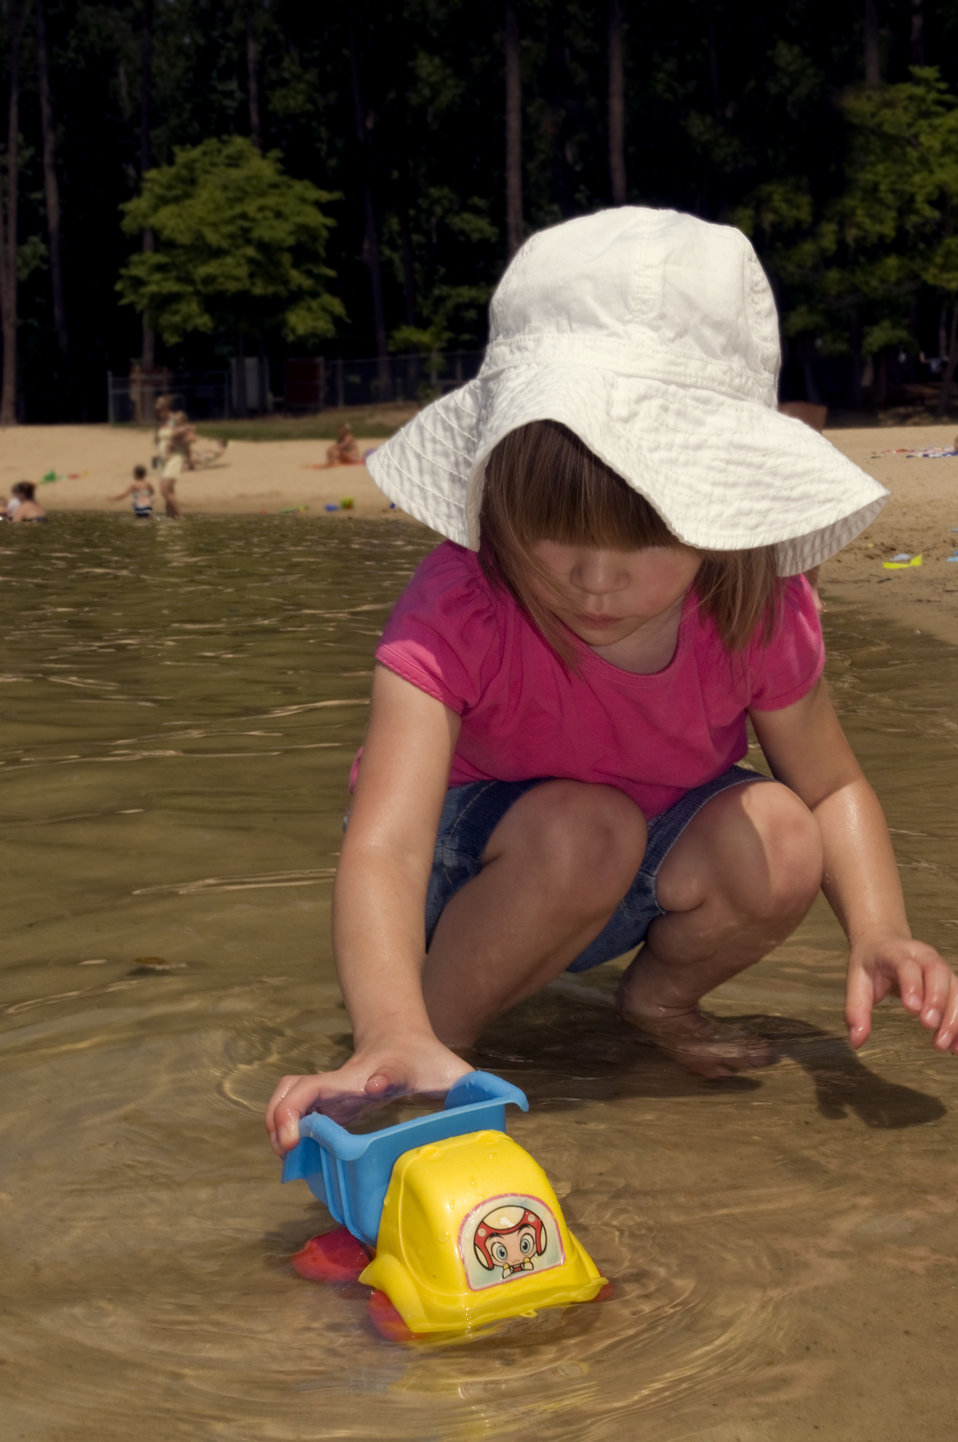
The young girl depicted here, was kneeling at the water's edge at one of Georgia's beautiful lakes. She was playing with the plastic toys she'd brought from home. Note the large white hat she was wearing atop her head protecting her from the harmful rays of the sun, as well as a bright pink top, and a pair of denim shorts, all shielding her from damaging ultraviolet rays. Hopefully, sunscreen had been applied to her exposed skin.